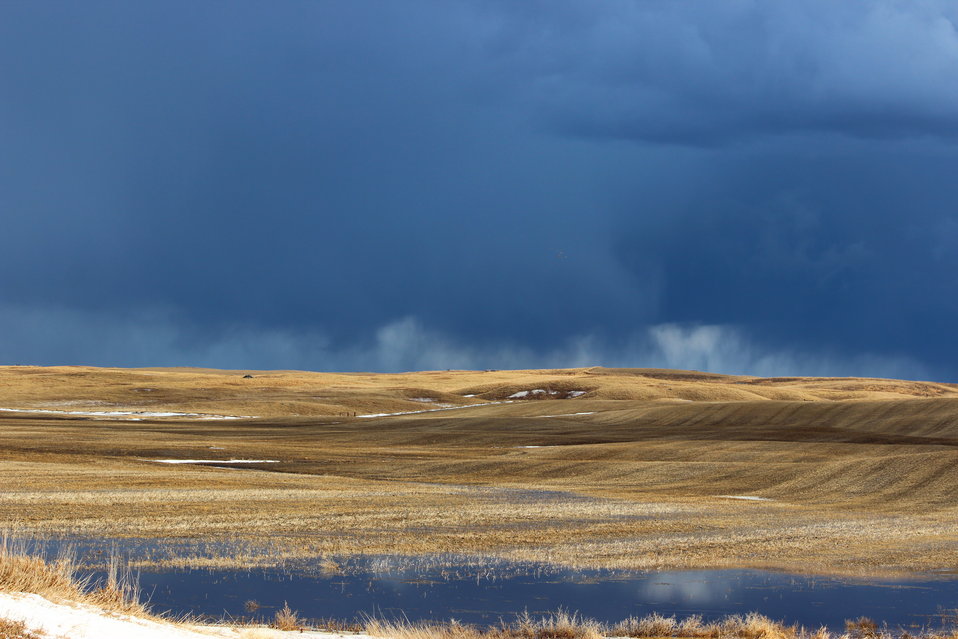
April Showers

April rains in McIntosh County, North Dakota.